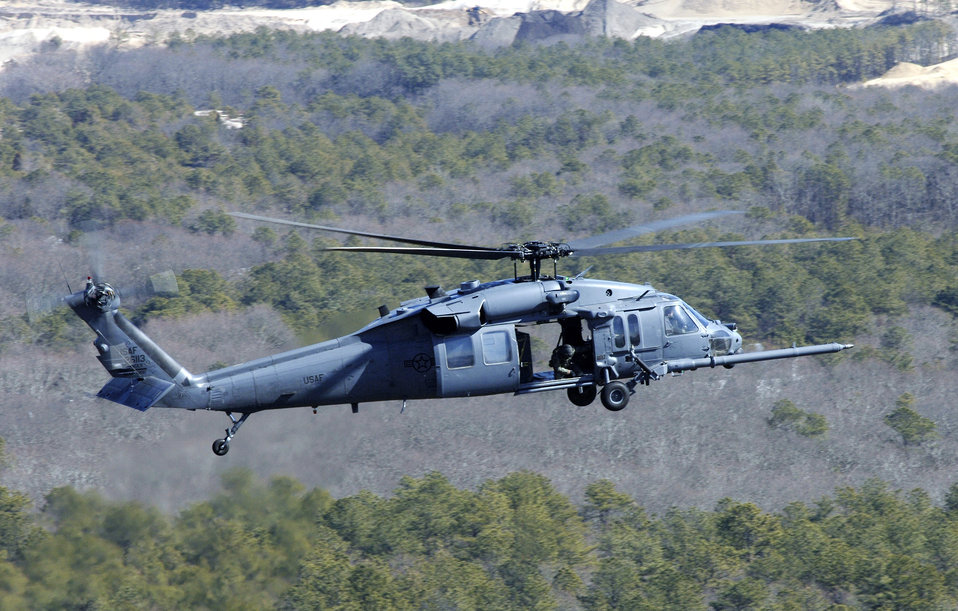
CENTAF airpower summary for June 23

HH-60G Pave Hawk helicopters conduct day or night operations to support medical evacuations in Southwest Asia. On June 22, HH-60Gs and Guardian Angel teams transported seven patients to coalition field hospitals from locations in Afghanistan.